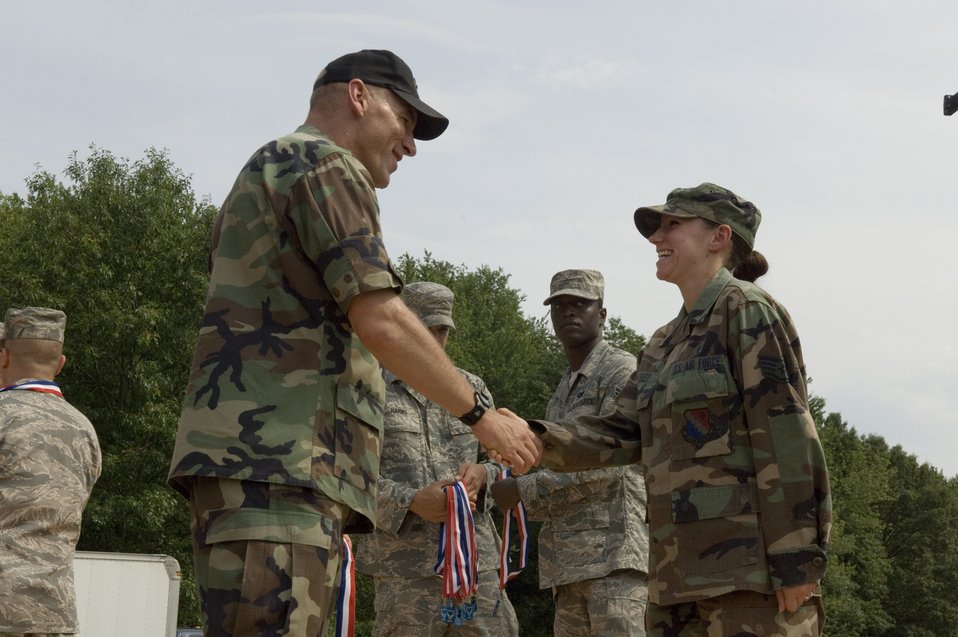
Heroes homecoming

Staff Sgt. Gina Lauber (right) shakes hands with Col. Tom Schluckebier during the Heroes' Homecoming ceremony June 27 at Hanscom Air Force Base, Mass. The ceremony paid tribute to more than 50 base Airmen who were deployed over the past six months, as well as Airmen's families. Sergeant Lauber is assigned to the 66th Medical Group, and Colonel Schluckebier is the 66th Air Base Wing commander.